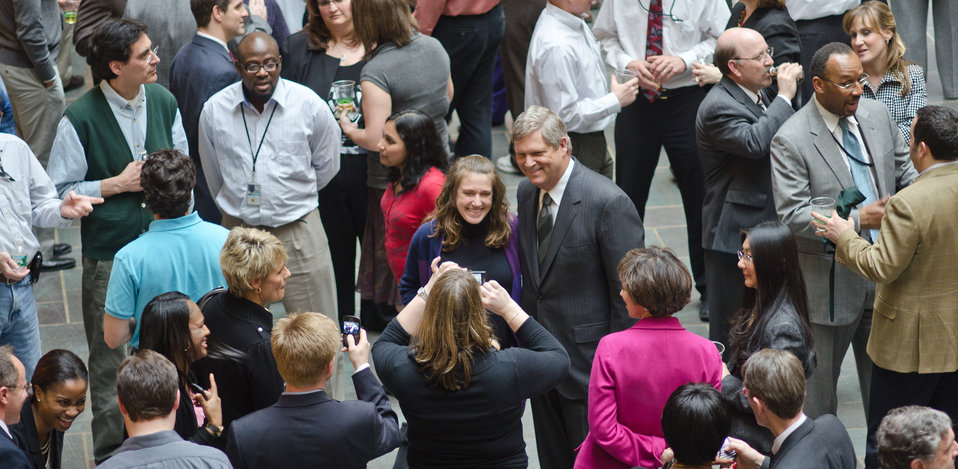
U.S. Department of Agriculture (USDA) Secretary Tom Vilsack (center) hosted a get together of colleagues for conversation and a break from the day-to-day routine, on the Patio of the Whitten Building in Washington, DC, on Friday, March 25, 2011. Secretary Vilsack sponsored the pop and pretzel event “to help recognize the great work we are doing together for the American people.' The event enjoyed standing room only, attendance. Many took the opportunity to have a photograph taken with the Secretary.